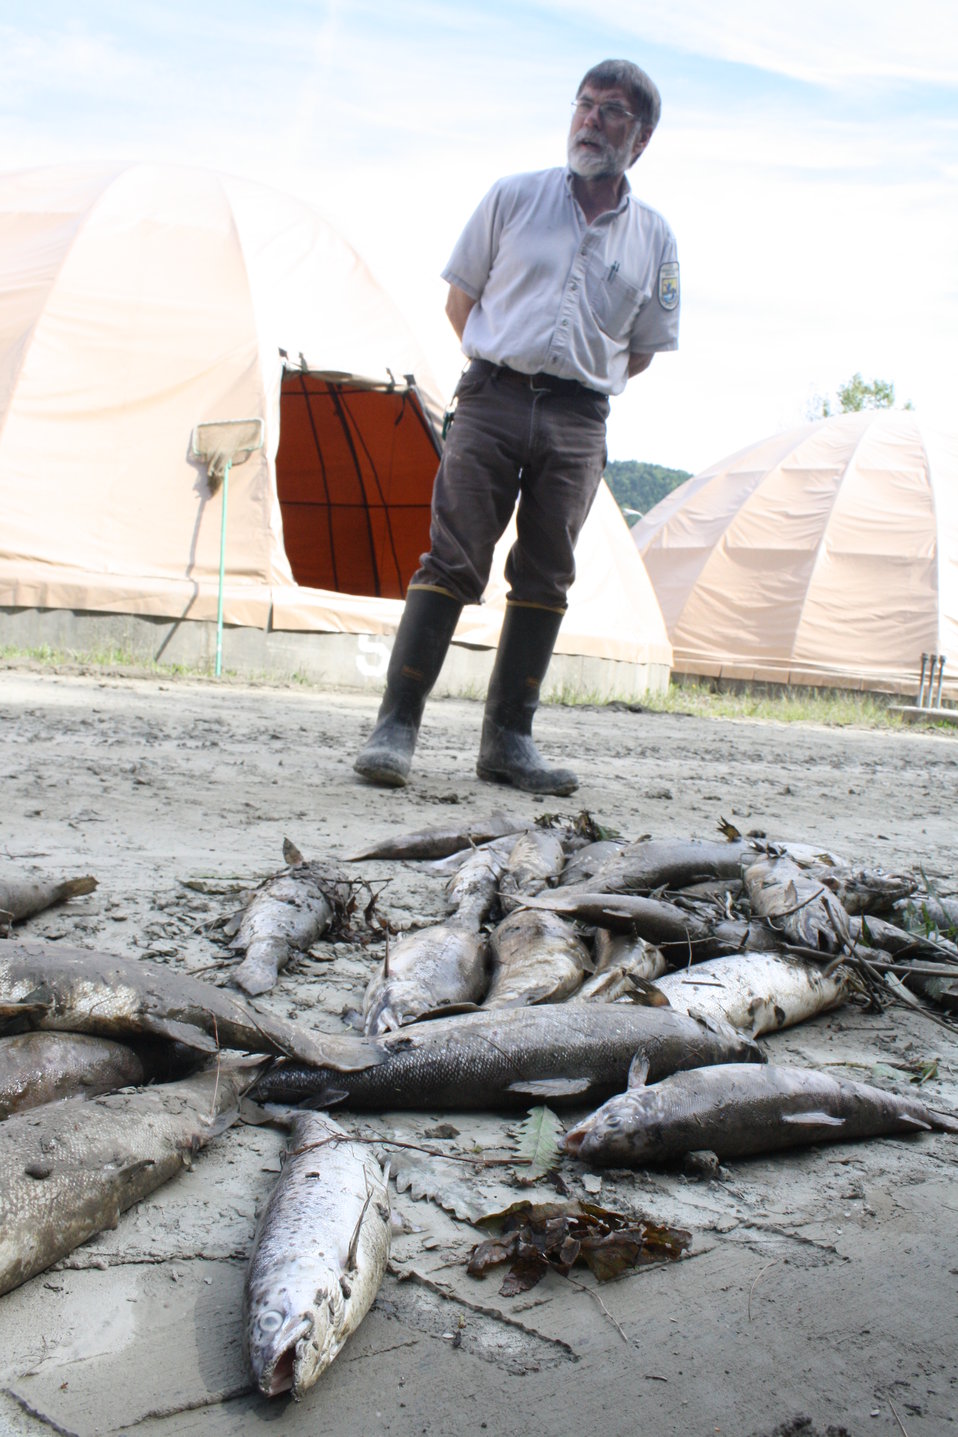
Dead fish, sediment after Hurricane Irene flood event

White River National Fish Hatchery project leader Ken Gillette surveys damage to grounds.

High flood waters breached some circular fish rearing pools at White River National Fish Hatchery during Hurricane Irene. Some fish escaped, and were left stranded by receding flood waters.

Significant amounts of river sediment were deposited on White River National Fish Hatchery grounds.